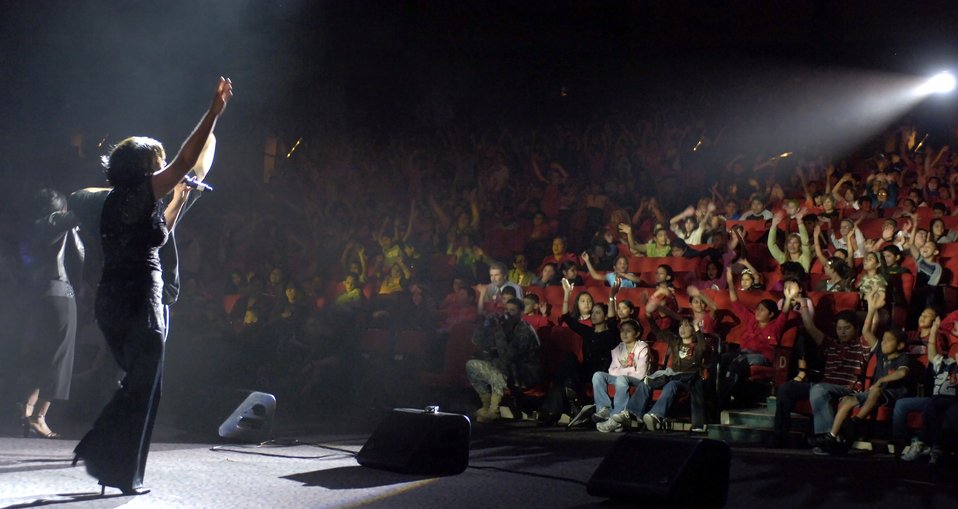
Sergeant takes Anti-drug battle personally

Reserve Generation, part of the Air Force Reserve Command Band from Robins Air Force Base, Ga., performs for third through seventh grade students attending an anti-drug concert Oct. 25 at Trinity University in San Antonio. The concert was part of National Red Ribbon Week, an anti-drug campaign focused on educating individuals, families and communities on the destructive effects of drugs and the positive alternative life choices that are available to youth. The 2006 Red Ribbon Week runs from Oct. 23 to 29.